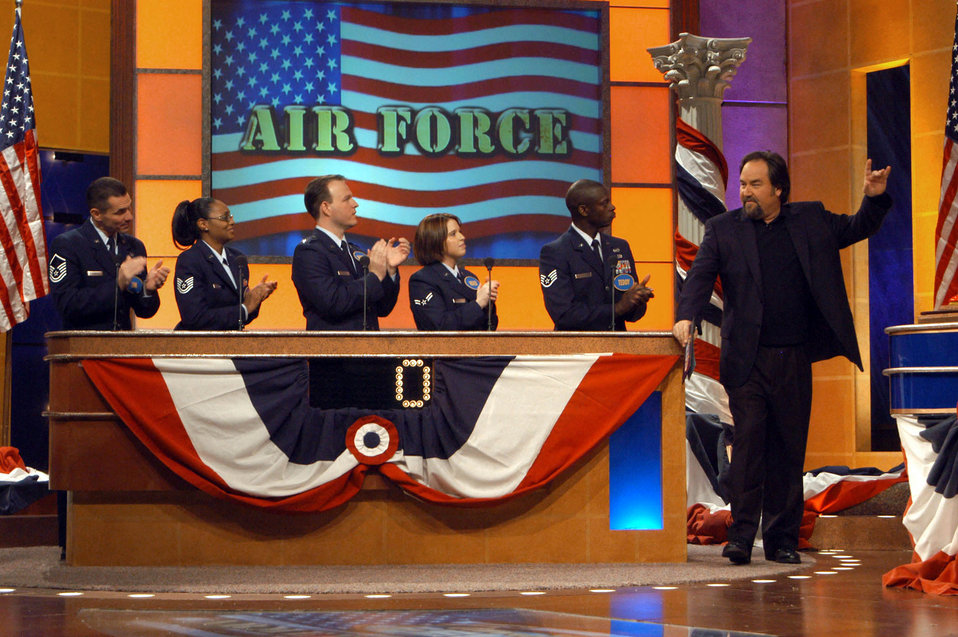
Family Feud

LOS ANGELES -- (From left) Master Sgt. Jim Gantar, Tech. Sgt. Daphne Soto, Capt. Robert Wagner, Airman 1st Class Holly Frost, Staff Sgt. Teddy Deshazier and host Richard Karn tape an episode of